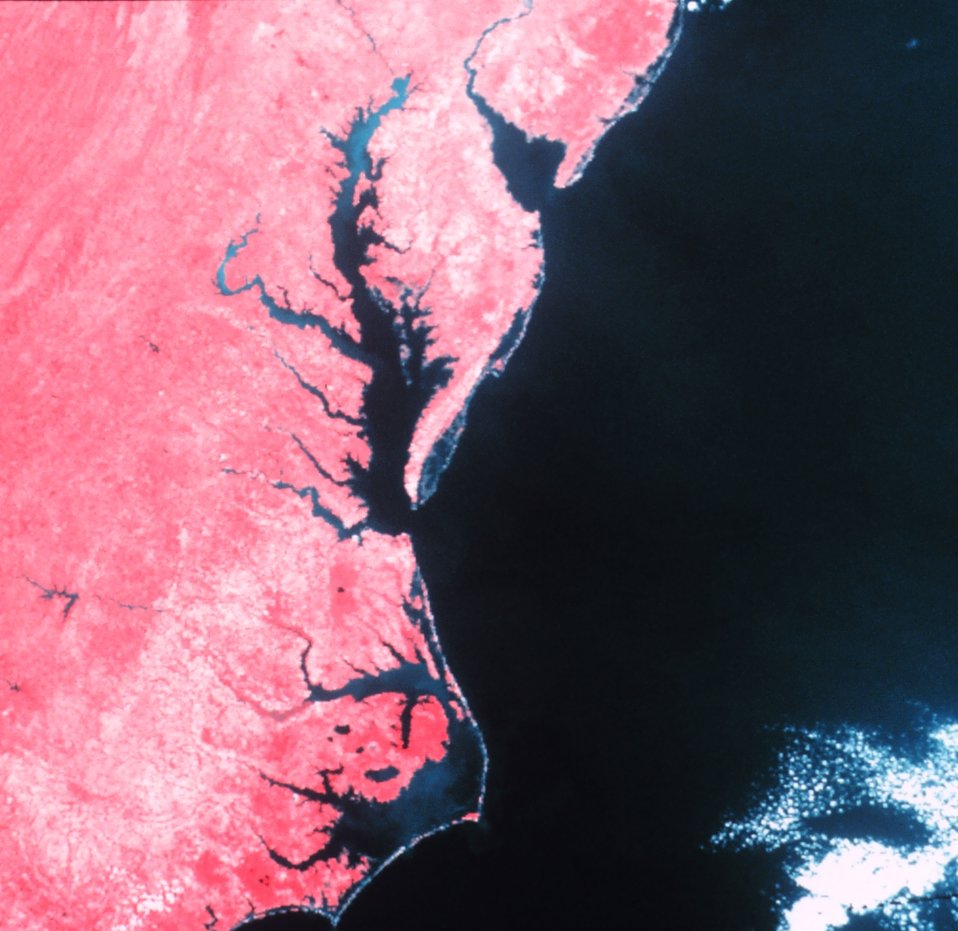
Cape Hatteras, Chesapeake Bay, and Delaware Bay as observed from a NOAA satellite with an infra-red sensor.